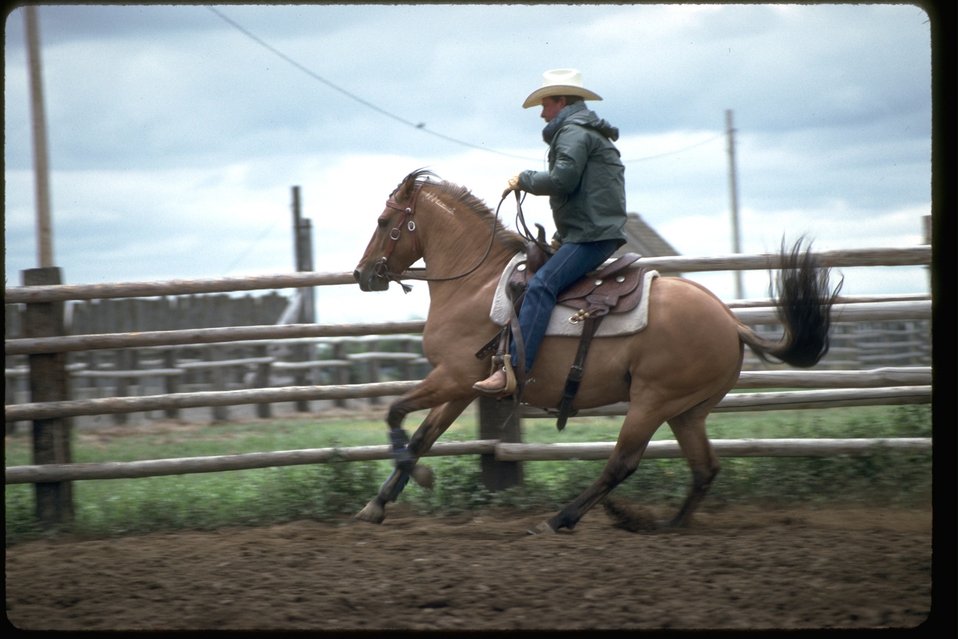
Professional trainer, Bobby Ingersol, shows off Kiger Cougar, an adopted Kiger Mustang. Southeast Oregon.